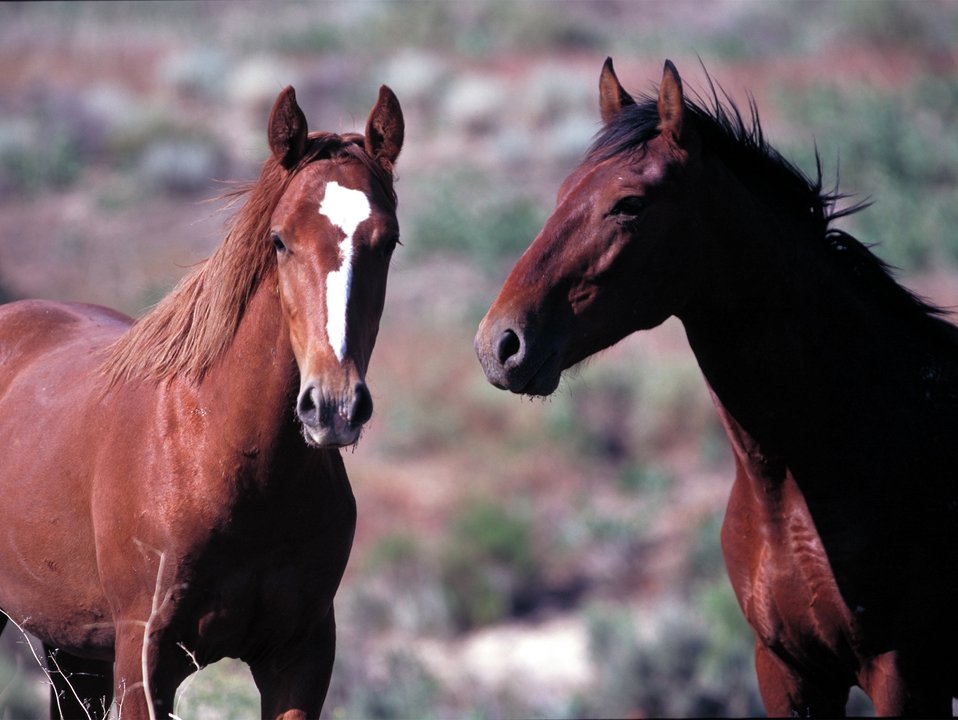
Onaqui Herd near Dugway, Utah.